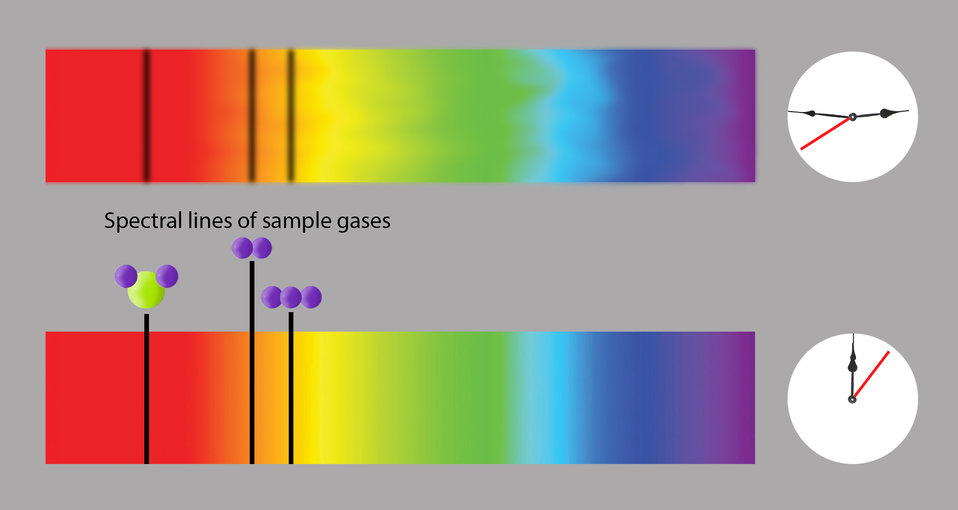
Spectrum Illustration

Fast, accurate spectroscopy scans of the atmosphere across a wide range of light frequencies could improve the performance of greenhouse gas measurement devices. This artist's conception compares current technology, which functions slowly and unevenly, with the NIST team's improvement, which changes the scanning laser's frequency evenly and more than 1,000 times faster, permitting full-spectrum scans within a few milliseconds.